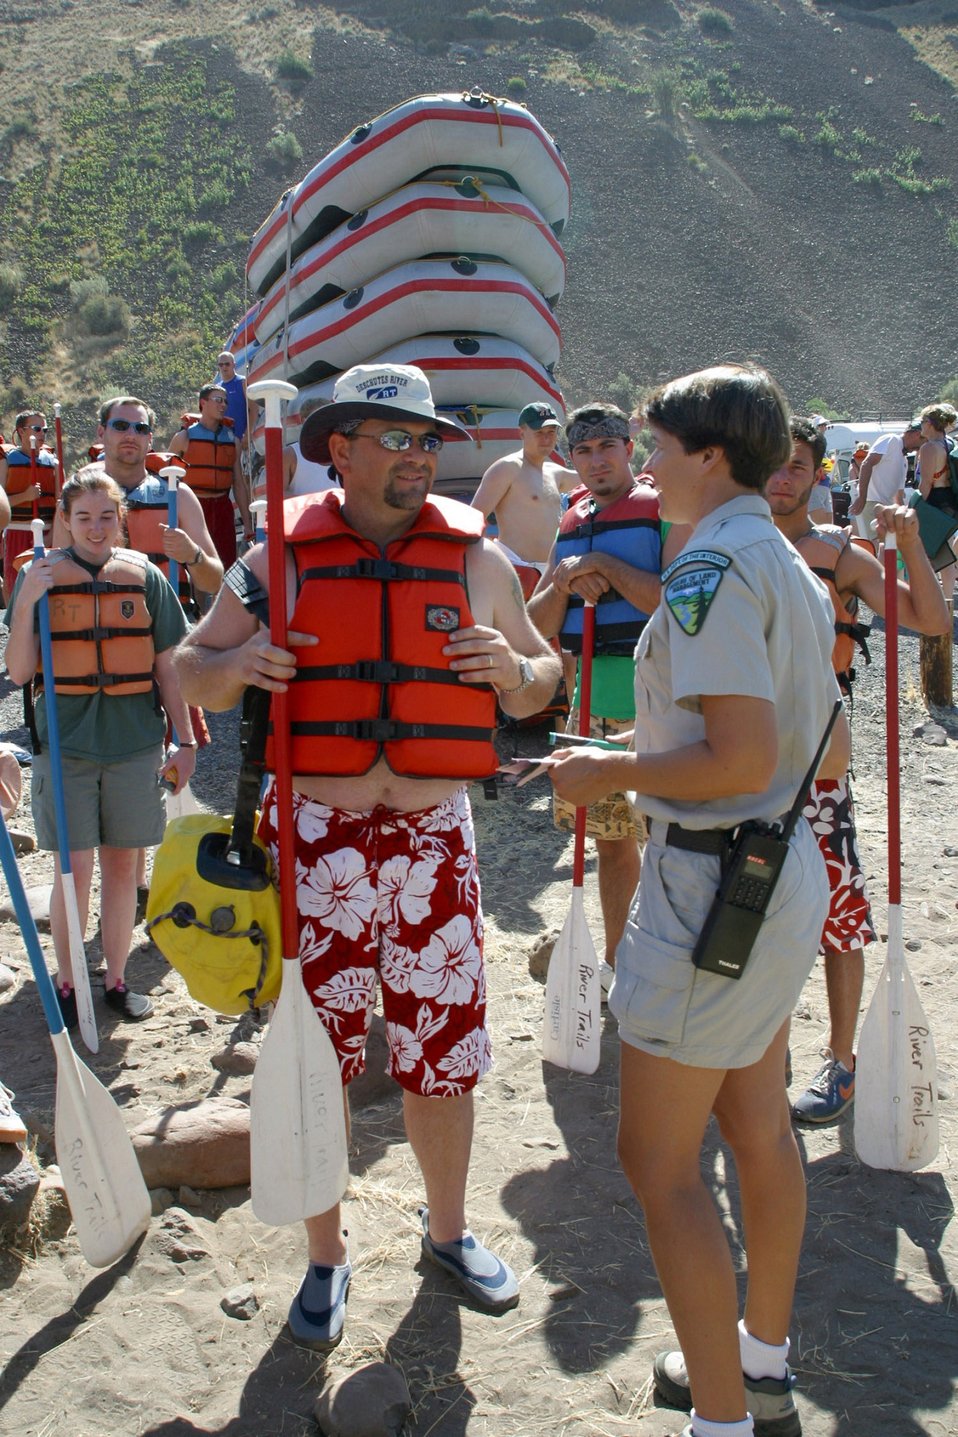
BLM River Rangers at Harphamp Flat check permits and issue boat tags while reminding users of current safety and fire regulations.